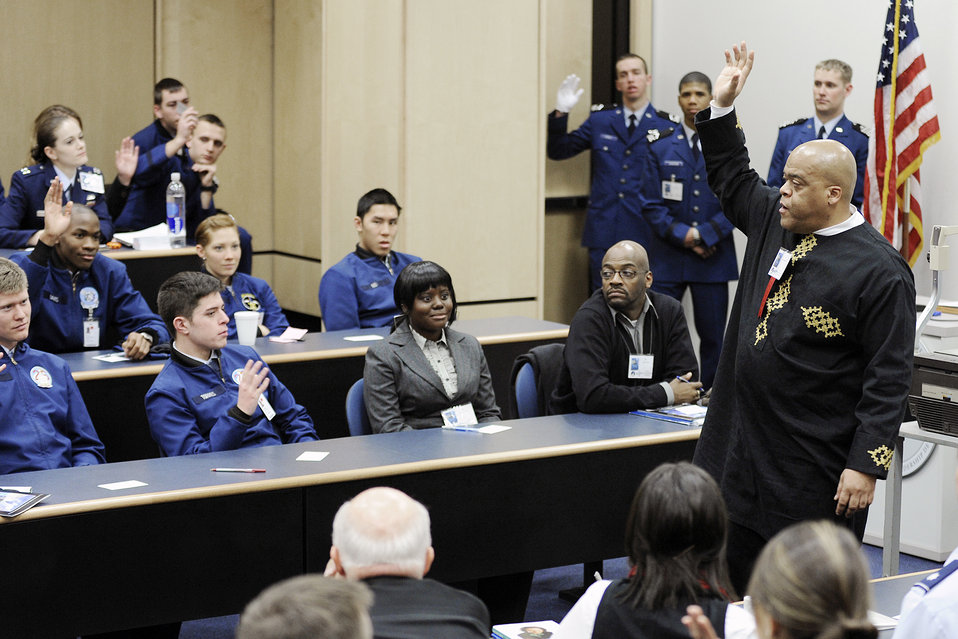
Speakers motivate cadets

Steve Burdine, a diversity educator and motivator, speaks to cadets at the 17th-annual National Character and Leadership Symposium at the U.S. Air Force Academy Feb. 19, 2010. Mr. Burdine talked to the cadets about ethical reasoning and developing a sense of moral courage.